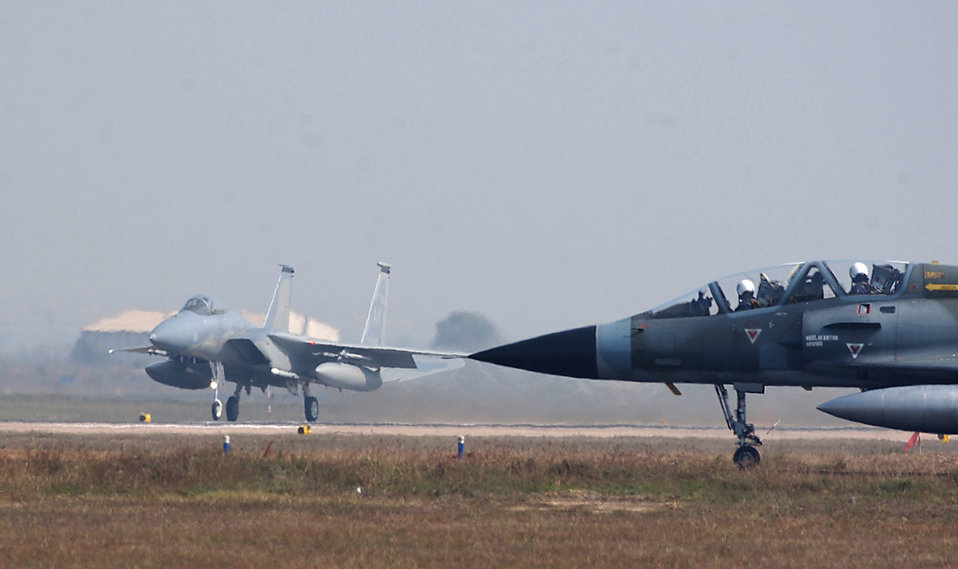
Cope India '04

GWALIOR AIR FORCE STATION, India (AFPN) -- As an Indian air force M-2000 Mirage waits to taxi to the runway, a U.S. Air Force F-15 Eagle takes off. Both American and Indian air forces are participating in Cope India 04, a bilateral dissimilar air combat exercise.